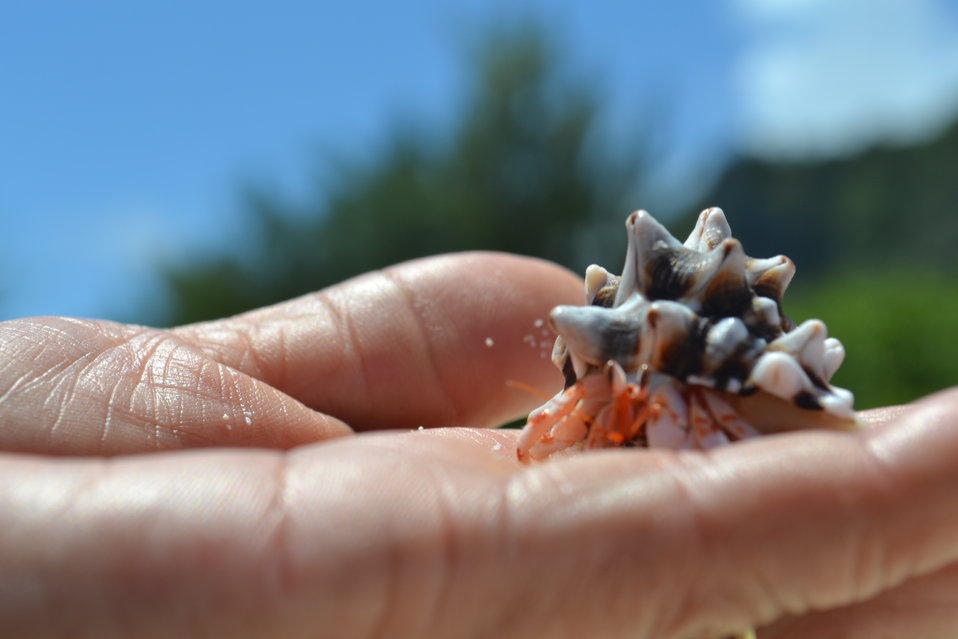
Camp Shutterbug 2011 prize winner

Guam National Wildlife Refuge, Pacific Islands
Photo: Faith Hutapea, age 11
Third place, Plants and Animals
Hermit crabs are called Dukduk on Guam. Locals coax hermit crabs from their shells by holding them at whisper-distance and softly calling, 'duk, duk, duk' until the crab emerges.